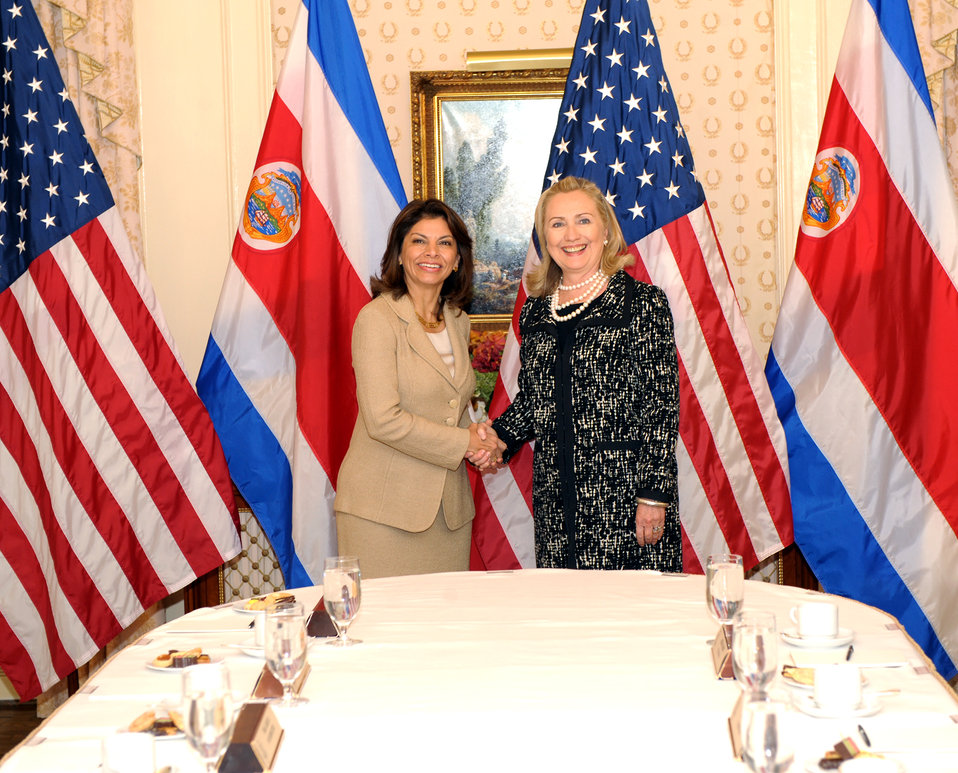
Secretary Clinton Meets With Costa Rican President Chinchilla

U.S. Secretary of State Hillary Rodham Clinton holds a bilateral meeting with Costa Rican President Laura Chinchilla in New York, New York, on September 23, 2011.